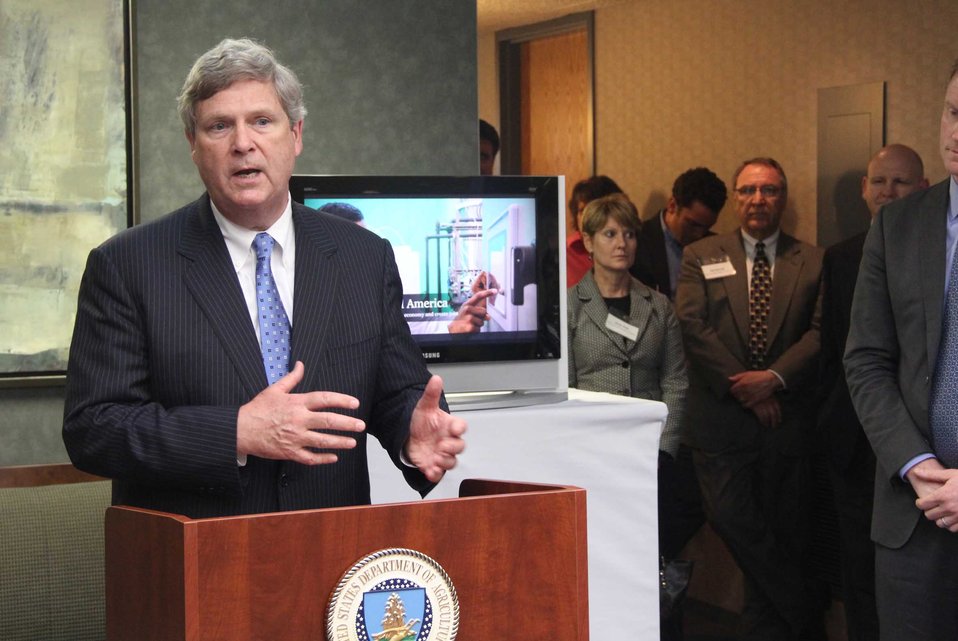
Agriculture Secretary Tom Vilsack announces the creation of a new investment fund that will help propel the growth of small businesses across rural America during a roundtable discussion with lenders and community leaders in Cedar Rapids, IA on Apr. 21, 2014. The new Rural Business Investment Company (RBIC) will be managed by Advantage Capital Partners with partners from eight Farm Credit institutions.